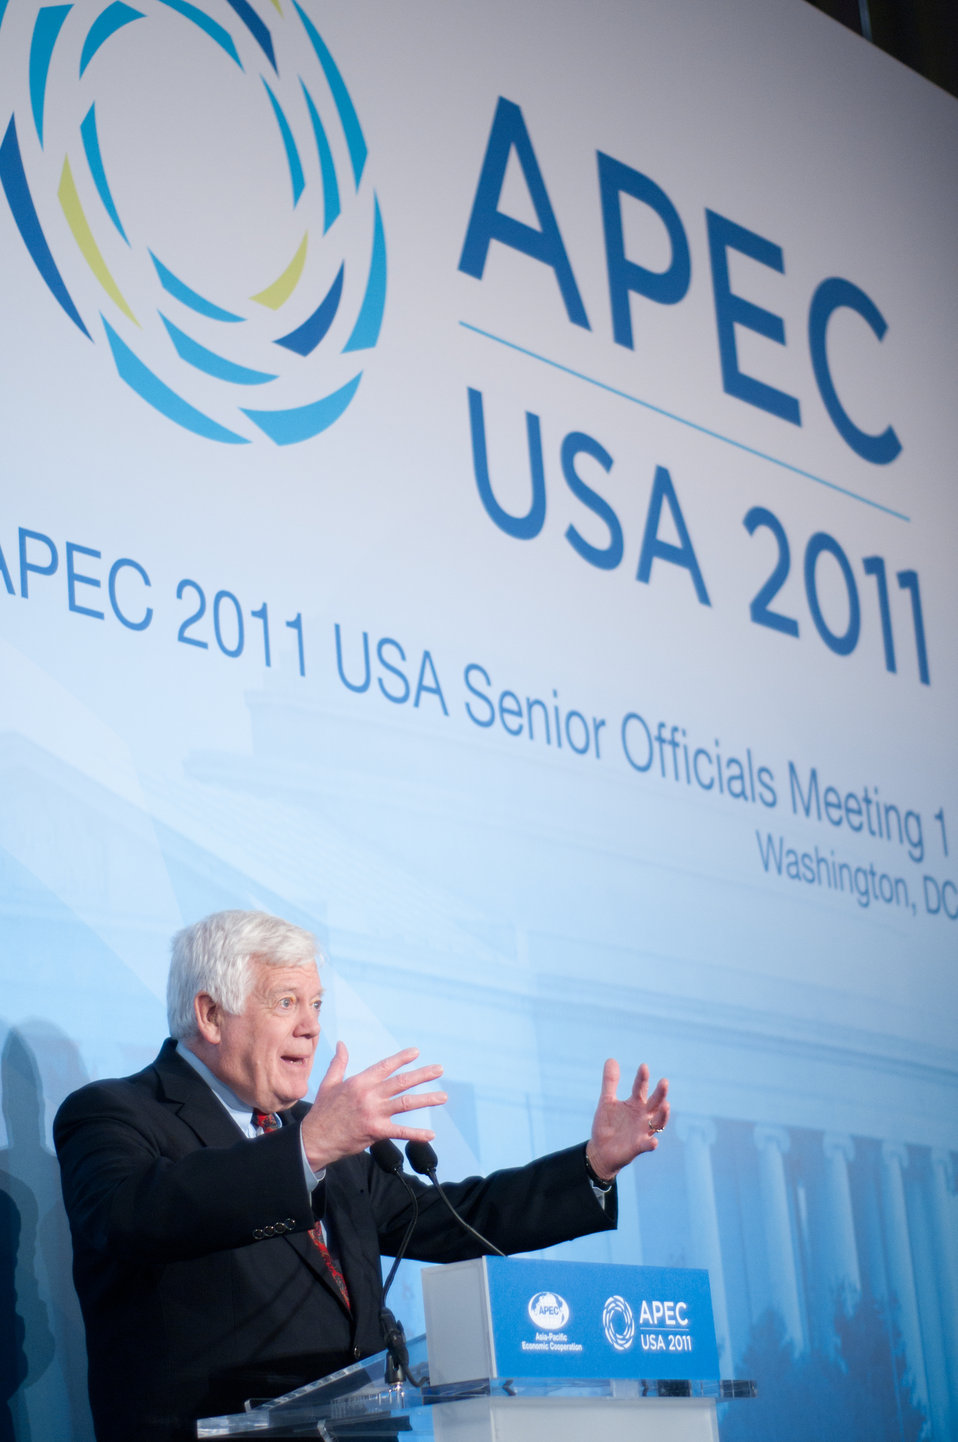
Congressman McDermott Speaks During Welcome Reception

Congressman Jim McDermott of Washington speaks at the First Senior Officials Meeting (SOM1) and Related Meetings of the APEC 2011 USA Host Year during the welcome reception at the Ronald Reagan Building in Washington, D.C., on March 9, 2011. [Fredde Lieberman photo]